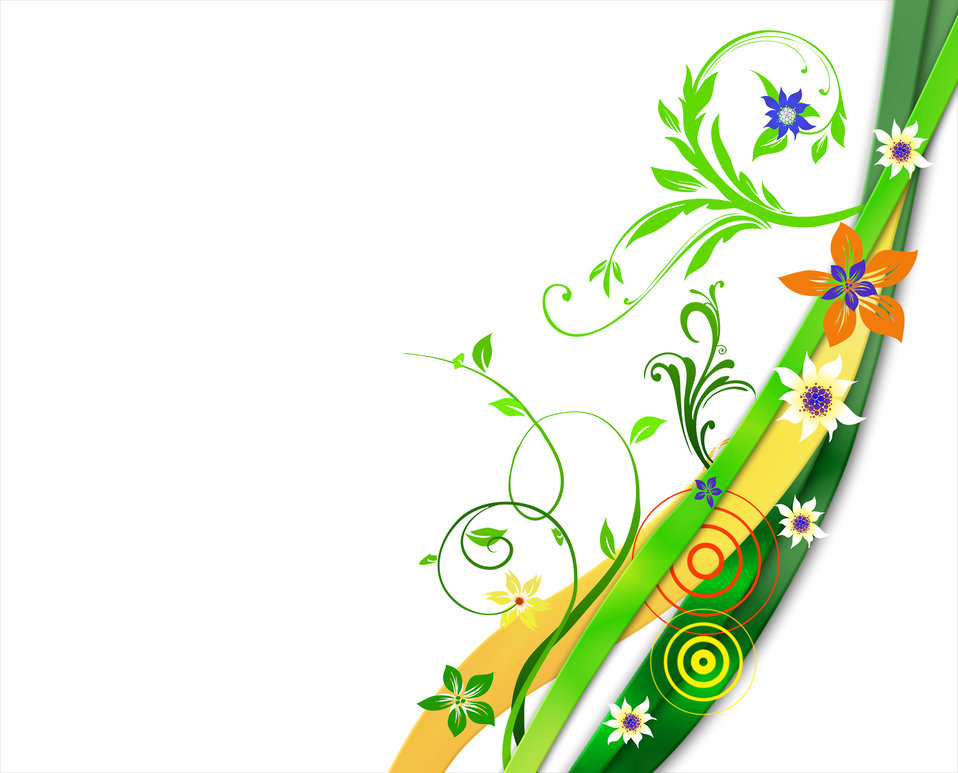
Spring collage

Spring background for card.